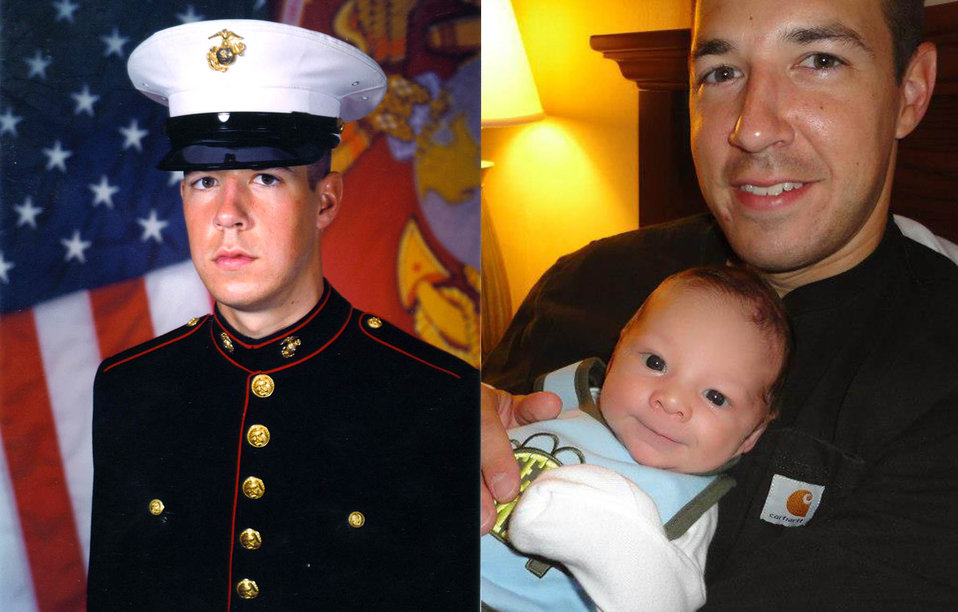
Joseph Porter .
.
Joseph Porter, a Wildlife Inspection Assistant in Region 4, entered the U.S. Marine Corps in January 2005,and served four years on active duty. He graduated from recruit training at Parris Island, SC and proceeded to Camp Pendleton, CA for training as an Amphibious Assault Vehicle repairman. He was later assigned to 3rd Assault Amphibian Battalion where his tour of duty included two deployments to Iraq...
.
He now is a wildlife Inspector at the Atlanta airport with the Office of Law Enforcement